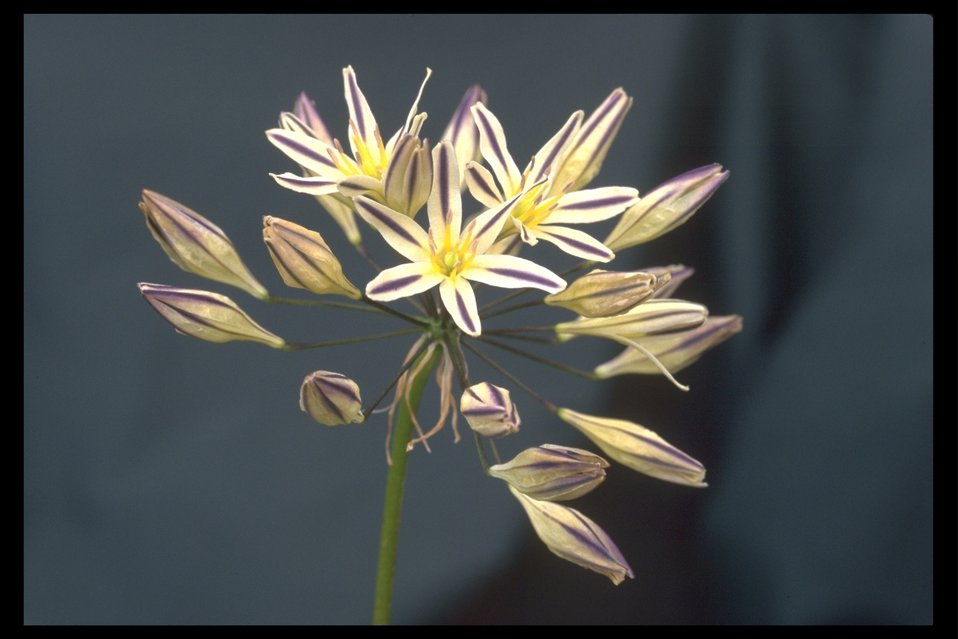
Henderson's Stars , or Henderson's Brodiaea (Triteleia hendersonii) along West Fork Trail Creek Drainage.